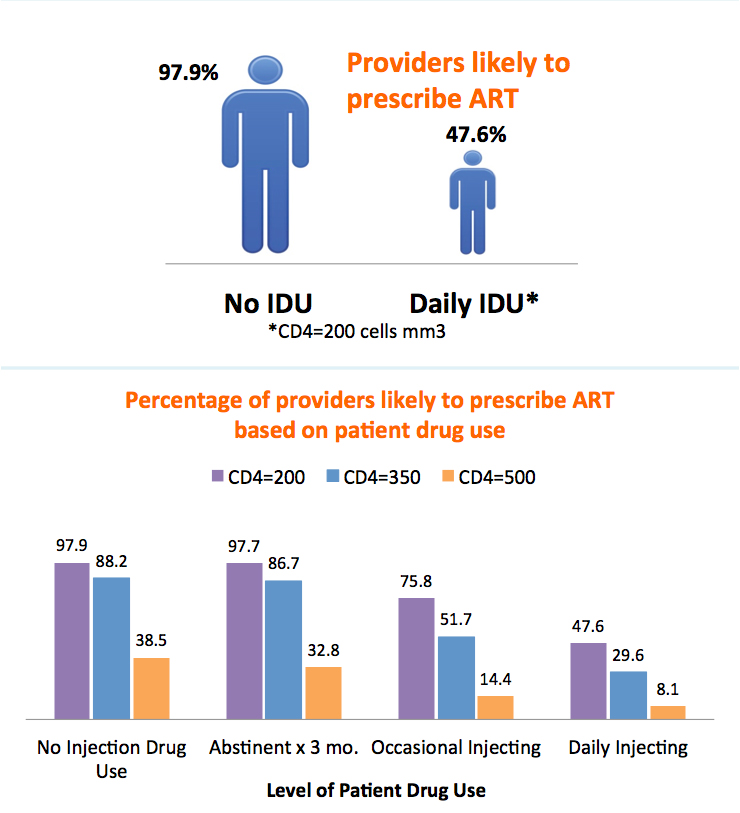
Providers Defer HIV Treatment for Injection Drug Users (IDUs)

Text Description of Infographic

People who abuse illegal drugs by injecting them are at much greater risk for contracting HIV than the rest of the population. Unfortunately, injection drug users (IDUs) who do contract HIV often do not receive standard antiretroviral therapy (ART) because of providers’ beliefs that IDUs are less likely to adhere to treatment, will not respond to it, and may develop resistant viral strains if treated. Research has not supported these concerns—studies have found similar survival rates and rates of drug resistance between IDUs and non-IDUs given ART—yet IDUs with HIV continue to be treated differently by healthcare providers.

To investigate factors leading to this disparity, an Internet-based study was conducted in which 662 U.S. and Canadian HIV treatment providers were surveyed about their attitudes about drug use and asked whether they would likely prescribe or delay ART treatment for hypothetical patients with different levels of drug use and with different levels of HIV infection.

Medical consensus is that any HIV-infected patient with a CD4 cell count under 200 cells/mm3 (the threshold for a diagnosis of AIDS) should receive ART treatment, and nearly all the providers surveyed indicated they would give ART to such a patient who did not use drugs. But nearly a quarter of the providers surveyed in the study indicated they would defer ART for such a patient if he or she injected drugs occasionally, and over half indicated they would defer treatment if the patient injected on a daily basis. Providers were even more likely to defer ART treatment for drug users with lower levels of infection. Physicians were more likely than non-physician providers to defer ART for injection drug users, as were providers with less experience treating HIV and those whose clinics served populations with fewer injection drug users. These findings should inform future interventions aimed at healthcare providers to reduce healthcare disparities for drug users who are infected with HIV.

Top Graph: Providers likely to prescribe antiretroviral therapy (ART) for HIV-infected patients with a CD4 cell count 200 cells per millimetercubed among non-injection drug users (97.9%) compared to daily injection drug users (47.6%).

Bottom Graph: Percentage of providers likely to prescribe antiretroviral therapy (ART) based on patient drug use. The data is shown by the number of CD4 cells a person has per millimeter cubed–including 200, 350, and 500 cells– and by the level of patient drug use including the following: No injection drug use, abstinent for 3 months, occasional injecting, and daily injecting.

No injection drug use: when CD4 is equal to 200 the percentage of providers likely to prescribe ART is 97.9, when CD4 is equal to 350 the percentage of providers likely to prescribe ART is 88.2, and when CD4 is equal to 500 the percentage of providers likely to prescribe ART is 38.5. Abstinent for 3 months: when CD4 is equal to 200 the percentage of providers likely to prescribe ART is 97.7, when CD4 is equal to 350 the percentage of providers likely to prescribe ART is 86.7, and when CD4 is equal to 500 the percentage of providers likely to prescribe ART is 32.8. Occasional injecting: when CD4 is equal to 200 the percentage of providers likely to prescribe ART is 75.8, when CD4 is equal to 350 the percentage of providers likely to prescribe ART is 51.7, and when CD4 is equal to 500 the percentage of providers likely to prescribe ART is 14.4. Daily injecting: when CD4 is equal to 200 the percentage of providers likely to prescribe ART is 47.6, when CD4 is equal to 350 the percentage of providers likely to prescribe ART is 29.6, and when CD4 is equal to 500 the percentage of providers likely to prescribe ART is 8.1.

Provider And Clinic-Level Correlates Of Deferring Antiretroviral Therapy For People Who Inject Drugs: A Survey Of North American HIV Providers. Westergaard RP, Ambrose BK, Mehta SH, Kirk GD. J Int AIDS Soc. 2012 Feb 23; 15:10.